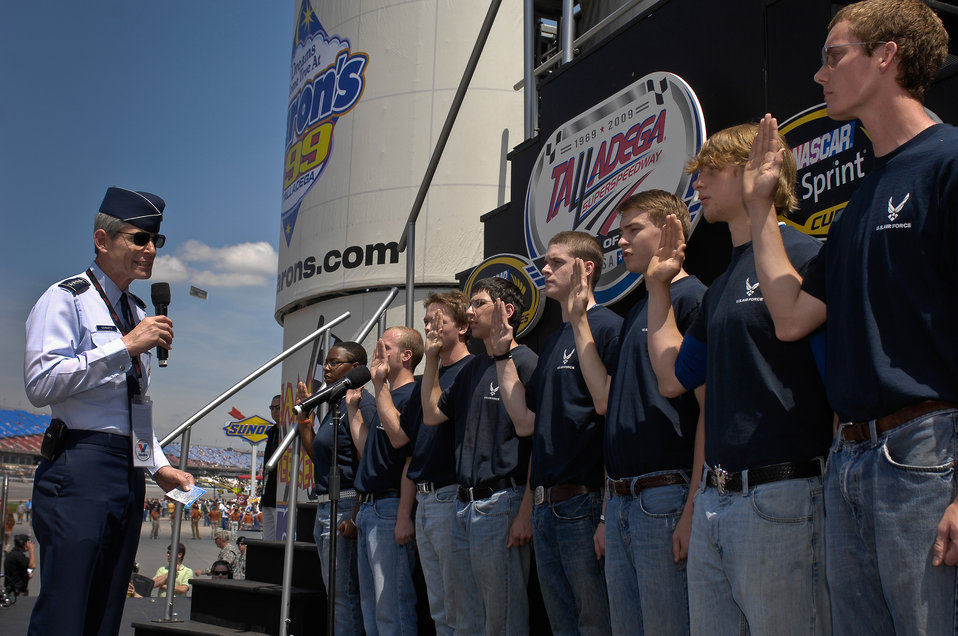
Air Force at Talladega

Air Force Chief of Staff Gen. Norton Schwartz performs a delayed enlistment program swear-in prior to the start of the NASCAR race April 26 at the Talladega Superspeedway in Talladega, Ala. General Schwartz was at the race to watch the #43 car run. The car, driven by Reed Sorenson, featured the Air Force primary paint scheme for the first time.